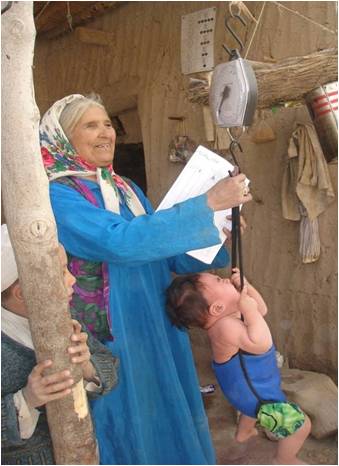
Growth Monitoring for Healthier Children

With sadness in her eyes, 16-year-old Fatima cradles her baby boy. Her son has remained small and is often ill compared to other children. She doesn’t know how to help him. Fatima’s story is all too common in Afghanistan, where more than 50 percent of children are chronically malnourished. Additionally, malnutrition is responsible for approximately 50 percent of child mortality in the country.
Addressing nutrition is difficult in the Afghan culture due to high female illiteracy rates and irregular access to health facilities by women. Community health workers (CHWs) can promote better nutritional practices but they struggle to encompass all the households in their communities.
USAID’s Basic Support for Institutionalizing Child Survival (BASICS) project has worked with the Afghan Ministry of Public Health to develop a community-based approach to detect malnutrition in children. The approach catches malnutrition early by monitoring children’s monthly growth through family health action groups (FHAGs) made up of 10 to 15 households.
The approach is simple, yet effective. A member of the community FHAG convenes monthly weighing sessions for all children under two years old at a central place in the village with the CHW present. Each child’s weight gain or loss is marked on a simple pictorial chart developed especially for use by illiterate CHWs and mothers. For children with insufficient weight gain, a FHAG member and CHW do an in-depth exploration of feeding practices with the mother. After exploring the types of food eaten, the quantities consumed and the frequency of the feedings, they make an agreement with the mother on how to improve the child’s diet. They also share health messages about vaccination, hand washing, prenatal care, and birth spacing. Any child who has not had a weight gain for two successive months is referred to the nearest health facility.
In the first five districts participating in community-based growth monitoring, more than 80 percent of the children are showing adequate weight gain. Fatima is happy her son is now gaining weight and has been healthier since she started attending the community growth monitoring sessions. This community approach is improving the nutritional status of children across Afghanistan.